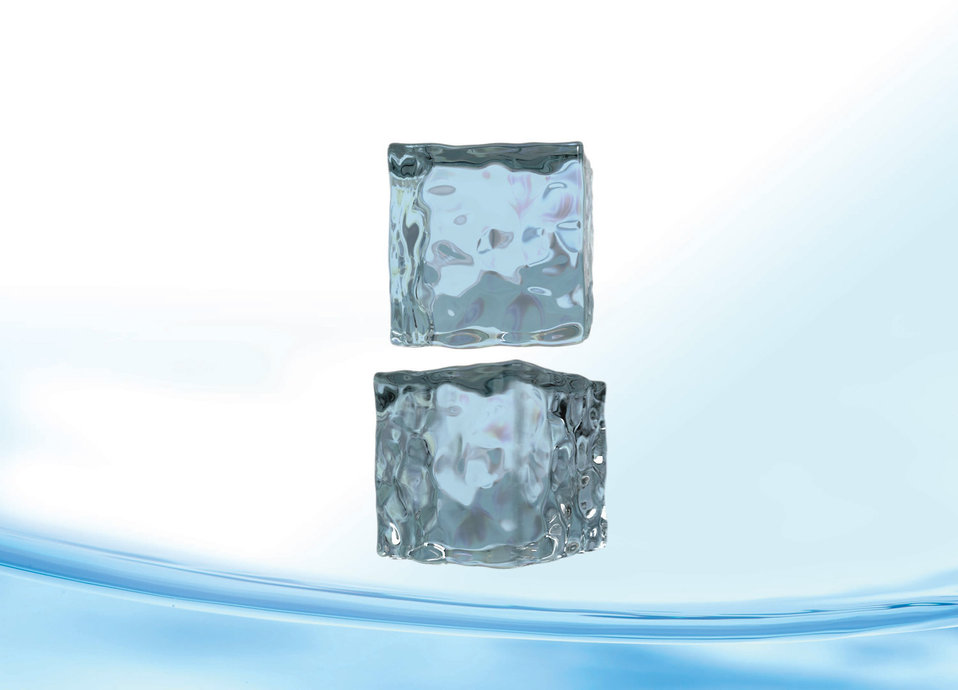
Blue ice background.